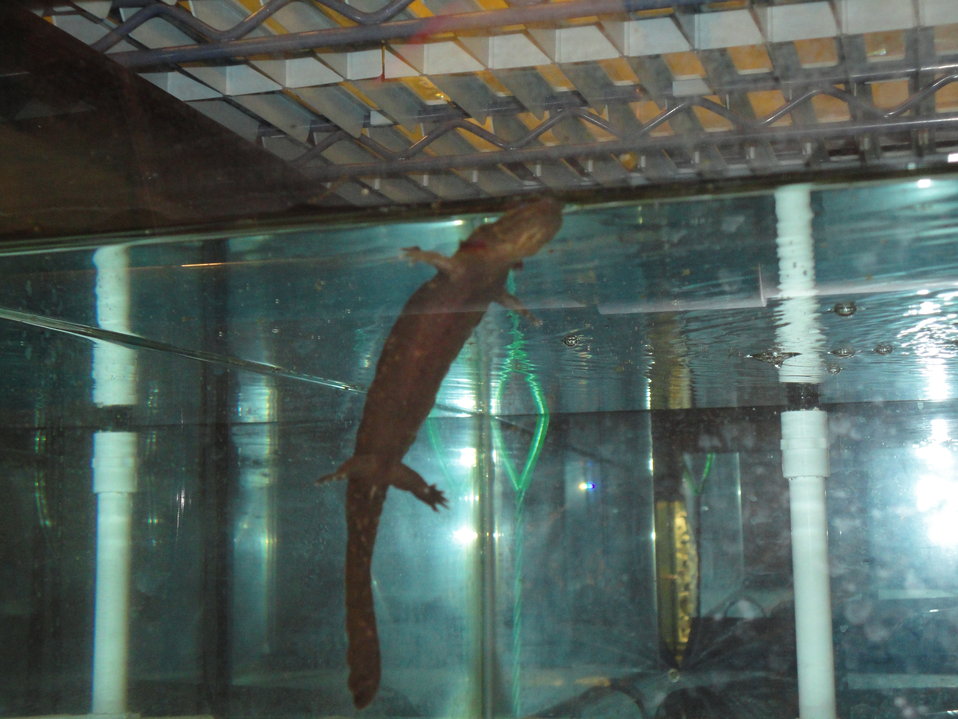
Hellbender at the Buffalo Zoo in New York.

The Buffalo Zoo received funding for hellbender research and restoration from the U.S. Fish and Wildlife Service and the New York State Department of Environmental Conservation as part of the State Wildlife Grants Program.